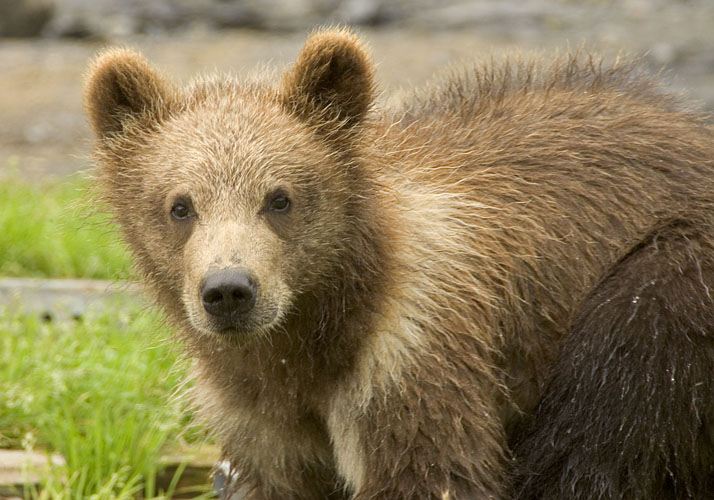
Bears of Kodiak Refuge